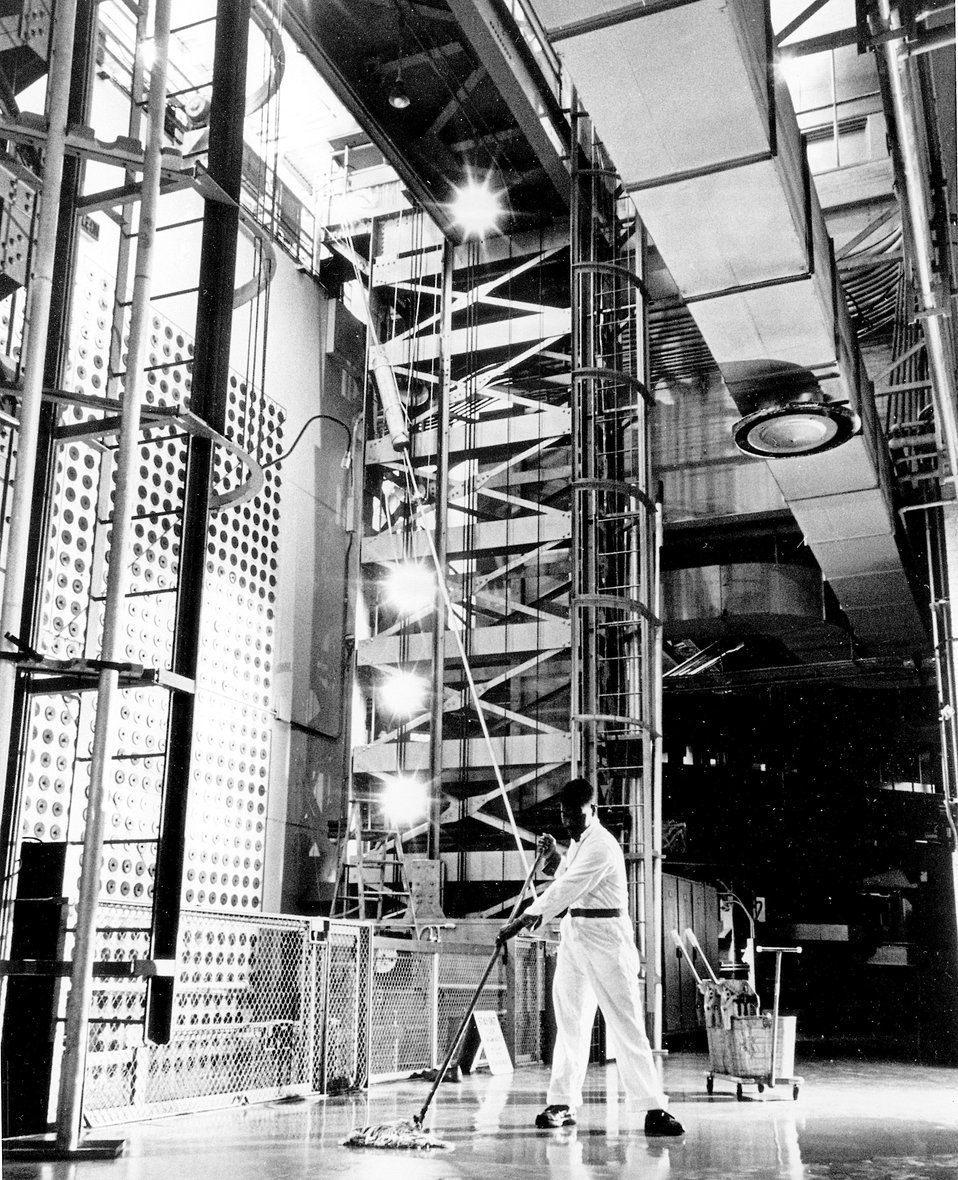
Atomic pile on stand-by basis after 18-year use. c. 1968